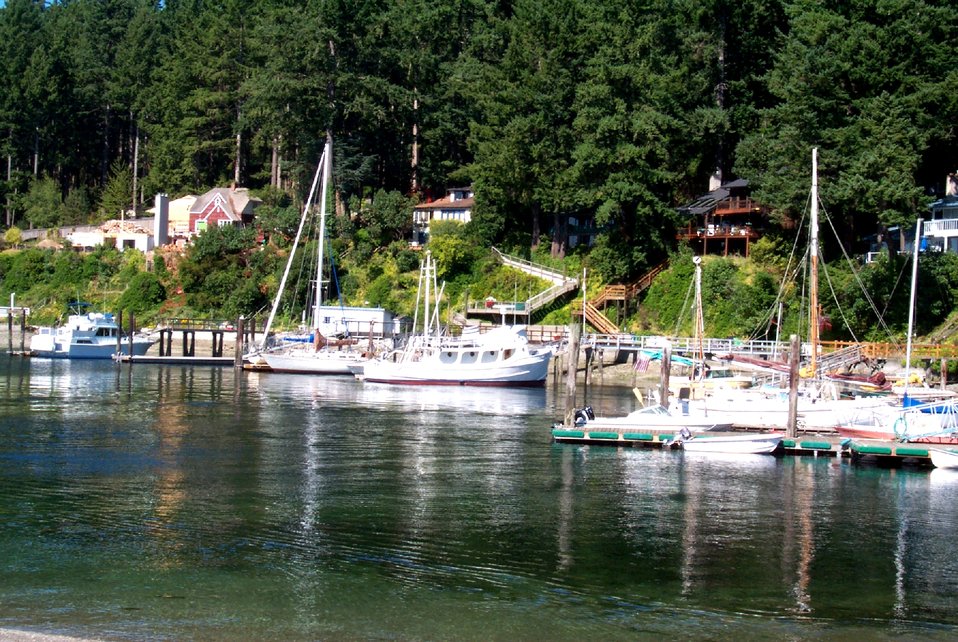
Private boat docks at Gig Harbor.